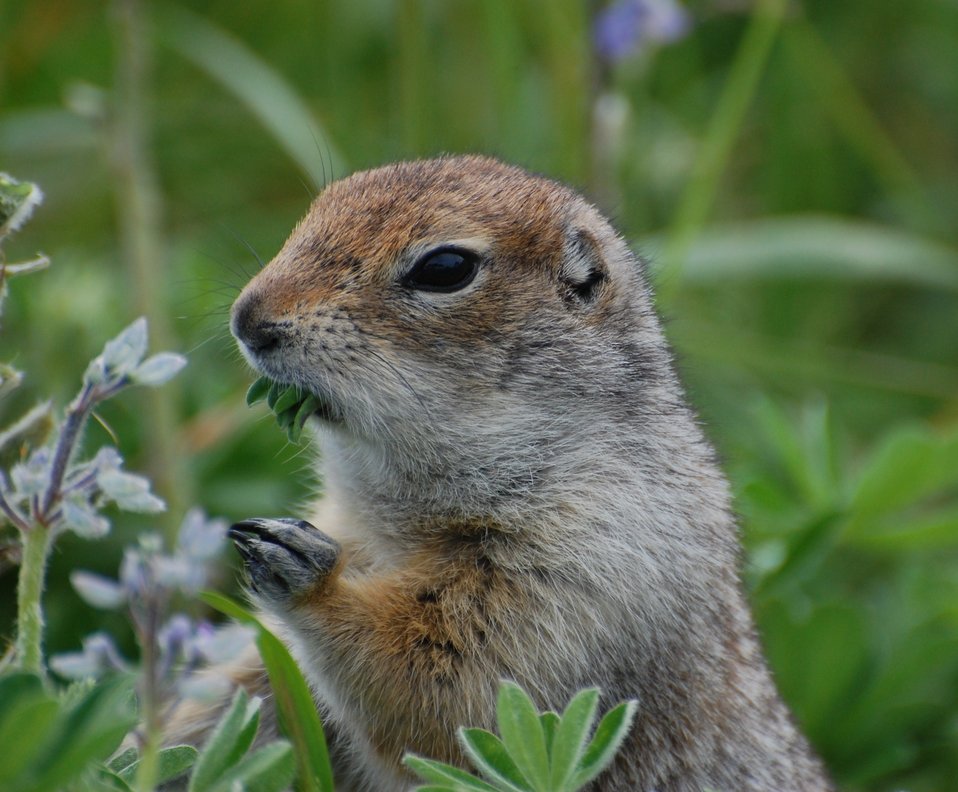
Arctic Ground Squirrel

Feeding on lupine seeds, Izembek National Wildlife Refuge